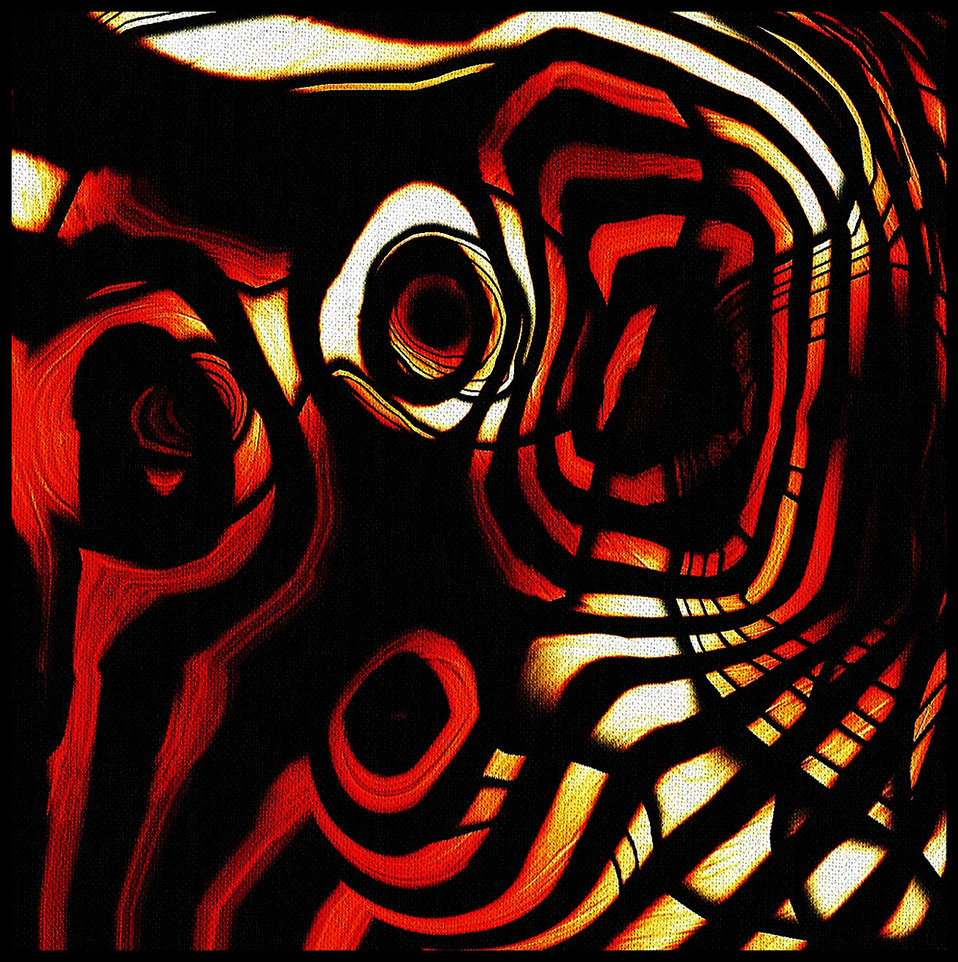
Depression

Cycle of the soul.